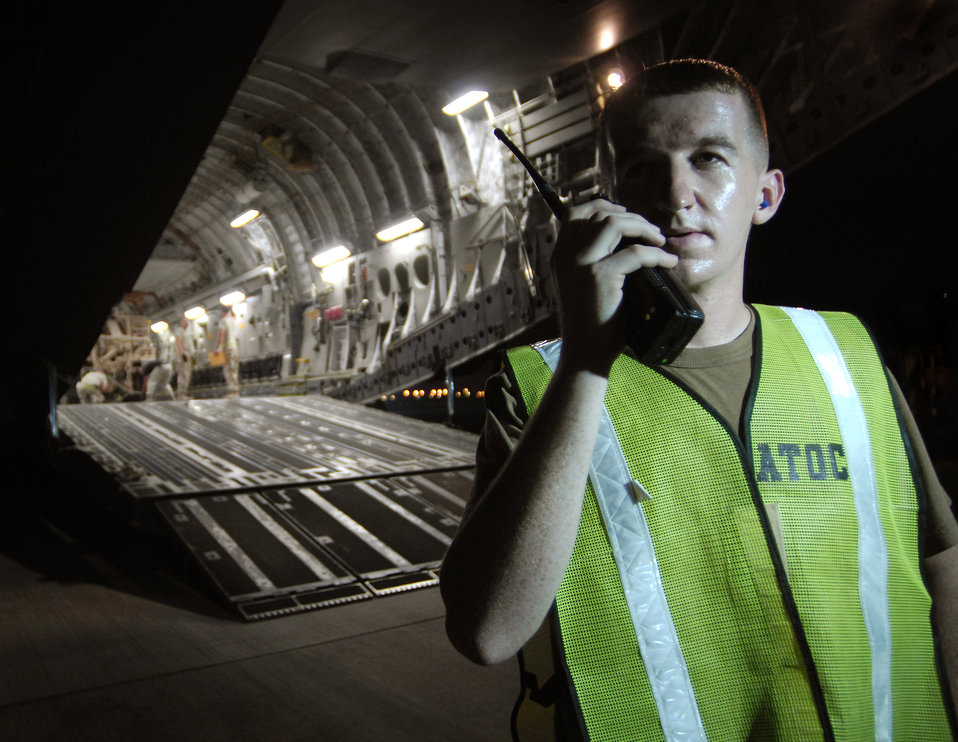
Ready to go

Staff Sgt. Shawn Finch checks in after helping to load a 58,210 pound armored wrecker onto a C-17 Globemaster. Air mobility in the U.S. Central Command area of operations moves people and cargo where needed. Sgt. Finch is an air terminal operations controller with the 8th Expeditionary Air Mobility Squadron.